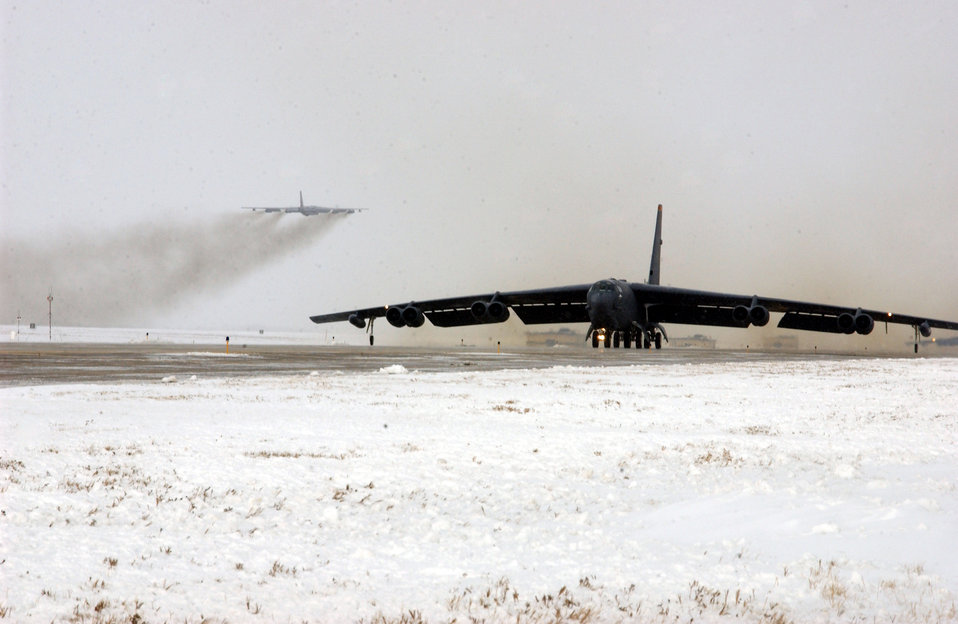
Snowy take-off

MINOT AIR FORCE BASE, N.D. -- B-52 Stratofortress bombers surge from the flightline here in response to an exercise Oct. 31, despite a winter storm that passed through the area. The storm reduced temperatures to 26 degrees, and dropped six inches of snow.